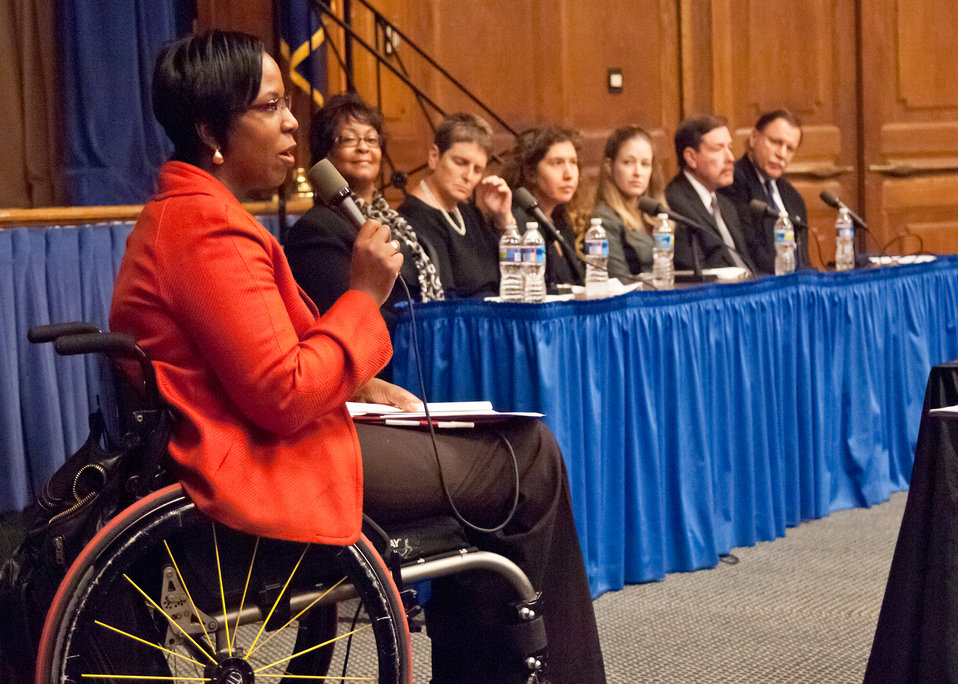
Carmen Jones, Senior Advisor, Departmental Management the moderator of the USDA Panel of Success: Hiring and Employing Individuals with Disabilities poses questions to panel members during the U.S. Department of Agriculture National Disability Employment Awareness Month event in Washington, DC, on Wednesday, October 5, 2011. To Jones left are panel members: Elaine Jones, Food and Nutrition Service, Robin Heard, Deputy Assistant Secretary for Administration, Francesca Yabraian, Office of the Deputy Assistant Secretary for Administration, Gari Jo Green, Office of Inspector General, Richard Swenson, Departmental Management, William Bethel, National Institute of Food and Agriculture. Agriculture Secretary Tom Vilsack is dedicated to establishing the USDA as the lead Federal agency in employing individuals with disabilities. The theme for the event is “Profit by Investing in Workers with Disabilities.” USDA is committed to ensuring that all our programs are accessible and inclusive of individuals with disabilities.